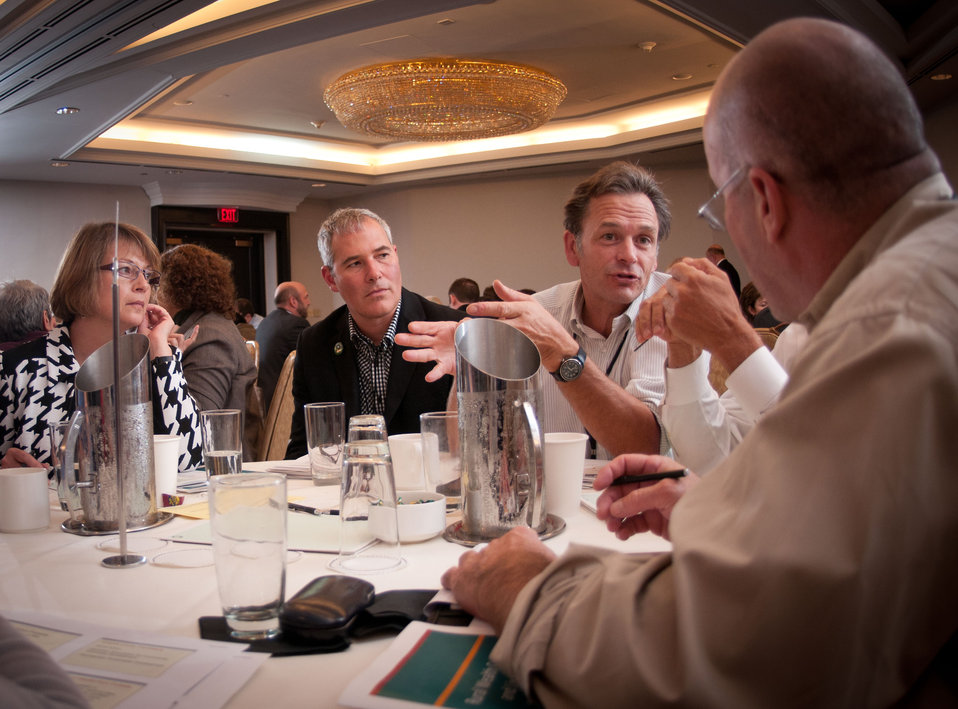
Participants discussed topics that plenary speakers talked about, during the general session of the Rural Wealth Creation and Livelihoods national conference for practitioners, researchers and policymakers, held at the Dupont Hotel, Washington DC, on Monday October 3, 2011.